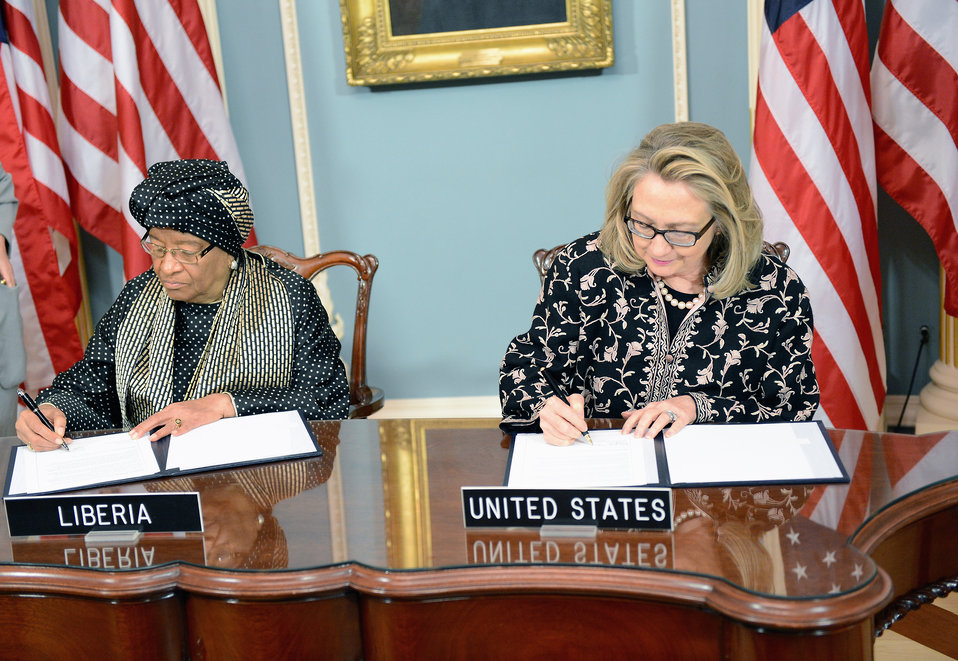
Secretary Clinton Holds a Signing Ceremony With Liberian President Sirleaf

U.S. Secretary of State Hillary Rodham Clinton holds a U.S.-Liberia Partnership Dialogue signing ceremony with Liberian President Ellen Johnson Sirleaf at the U.S. Department of State in Washington, D.C., January 15, 2013.